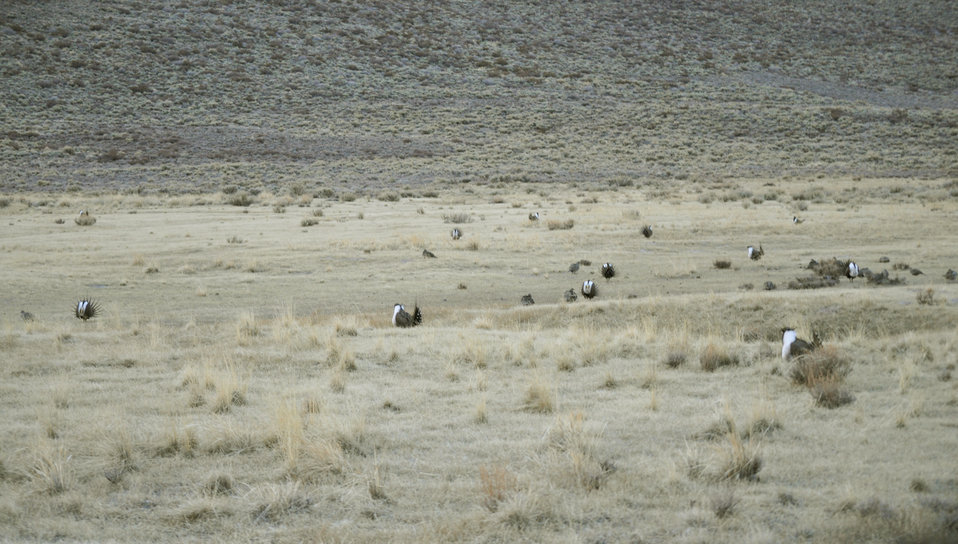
Greater Sage-Grouse at Lek

Greater sage-grouse lek near Bodie, California.